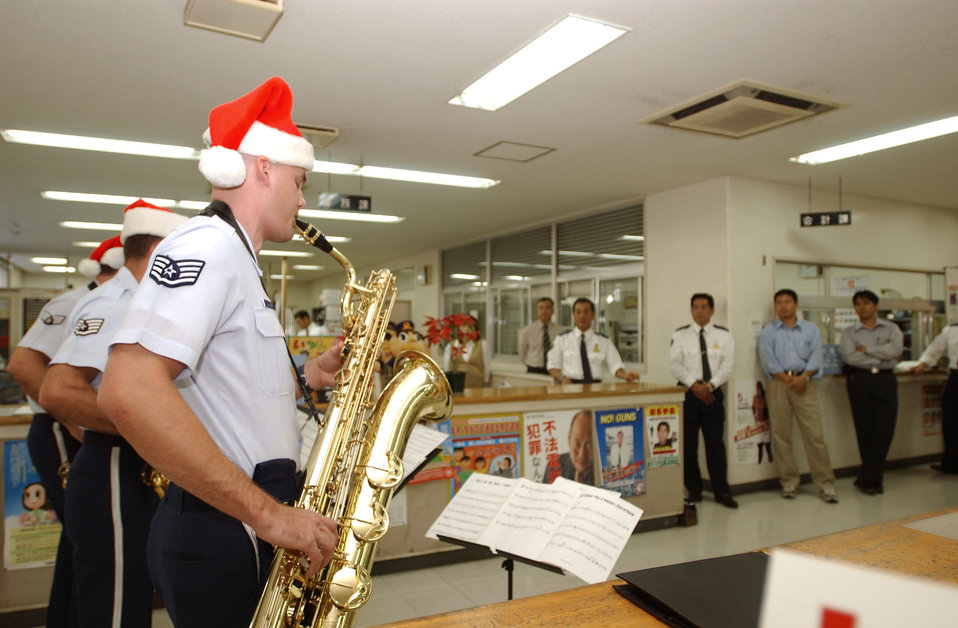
Santa serenade

OKINAWA CITY, Japan -- Staff Sgt. Jeff Saunders plays Christmas tunes Dec. 14 at a police station here. Also with the Pacific Saxophone Trio are Staff Sgt. James Wagner and Senior Airman Joe Butler. The trio is part of the Pacific Air Forces Band-Asia, based at Yokota Air Base, Japan. They played for units at nearby Kadena AB and at several off-base locations.